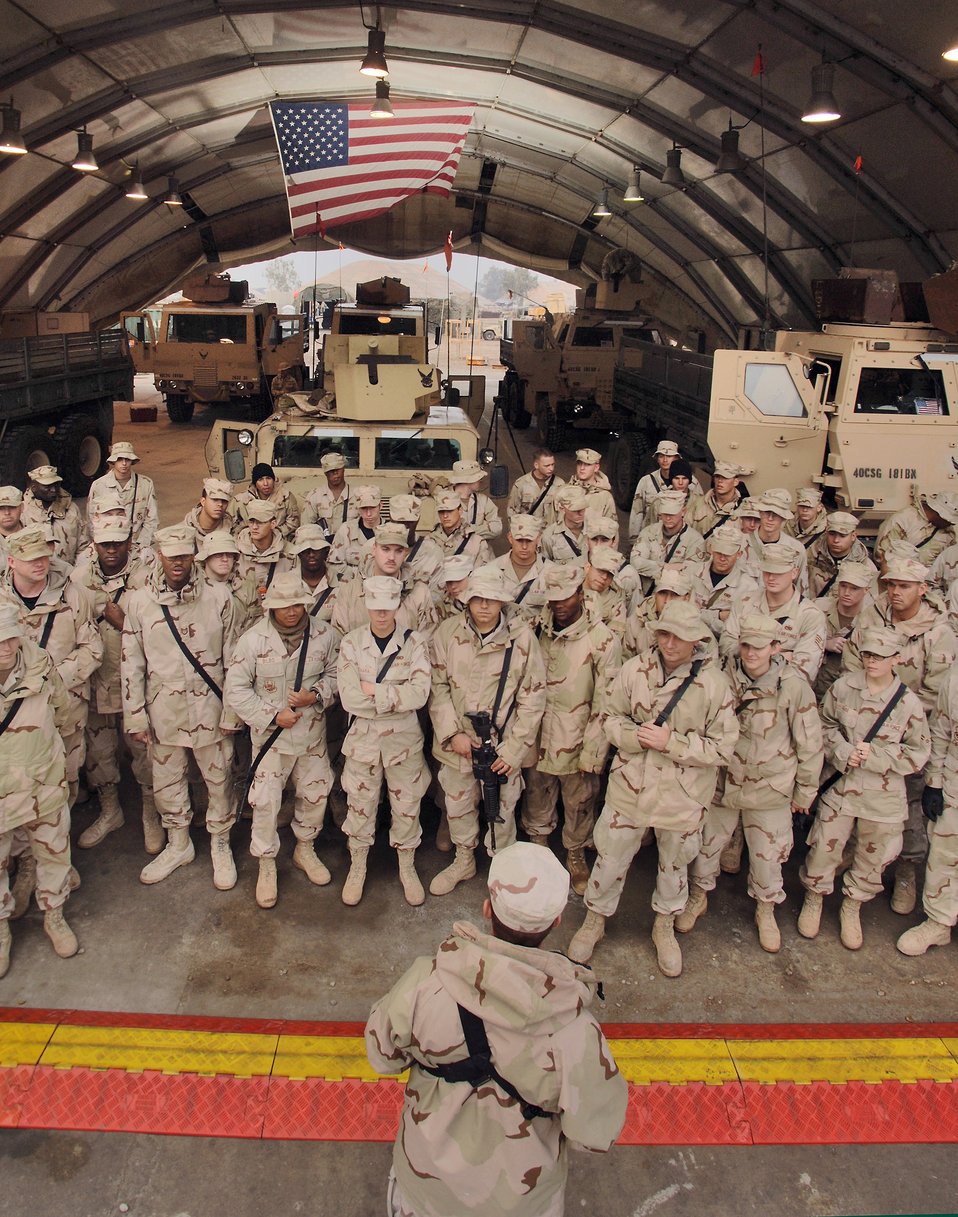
4 million miles

BALAD AIR BASE, Iraq (AFPN) -- Airmen with the 723rd Expeditionary Logistics Readiness Squadron gather after achieving the 4-million mile mark. The Airmen talked about their accomplishment and remembered Staff Sgt. Dustin Peters and Airman 1st Class Carl Anderson. The Airmen were gunners with the unit who were killed in action. The detachment ran its first convoy two years ago.